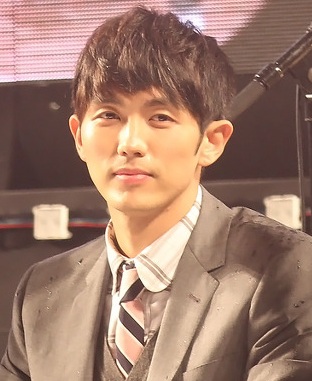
Seulong at Movie 26 years concert